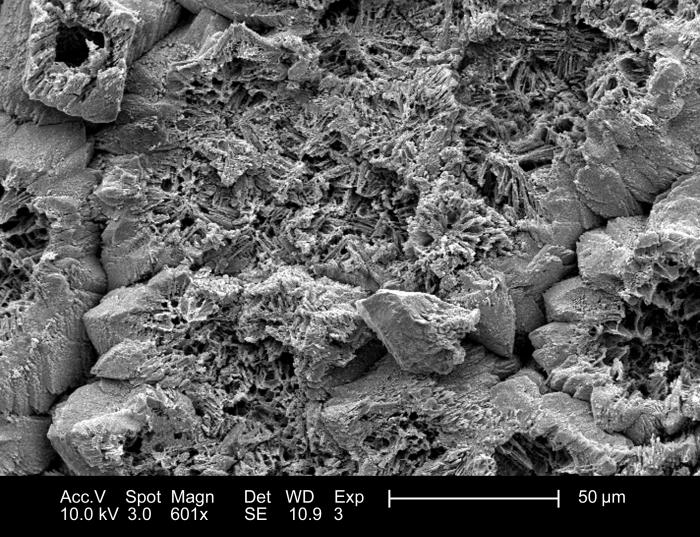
This 2005 scanning electron micrograph (SEM), depicted the morphologic characteristics of the inner surface of an unidentified bird's eggshell. In this view the details revealed included the surfaces of the mammillary cones with some accompanying 'voids', or 'holes'. This shell fragment was retrieved from the grounds of the Decatur, Georgia suburbs; Magnified 601x.